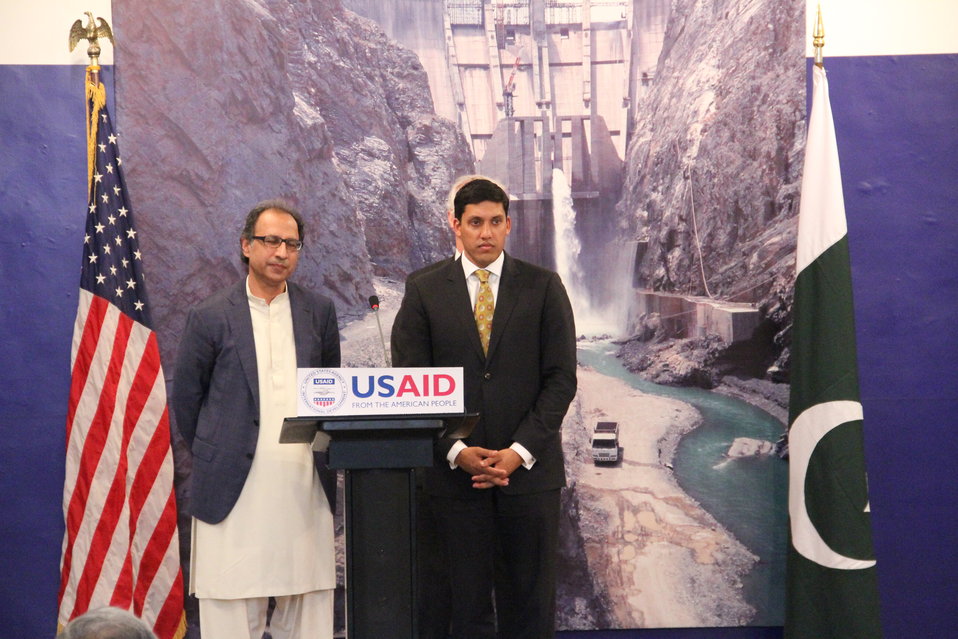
Photo Exhibition Celebrate US-PAK Cooperation at PNCA, Islamabad on April 13, 2012

Dr. Hafeez Sheikh, Federal Minister for Finance Govt. of Pakistan & Dr. Rajiv Shah, Administrator of the USAID